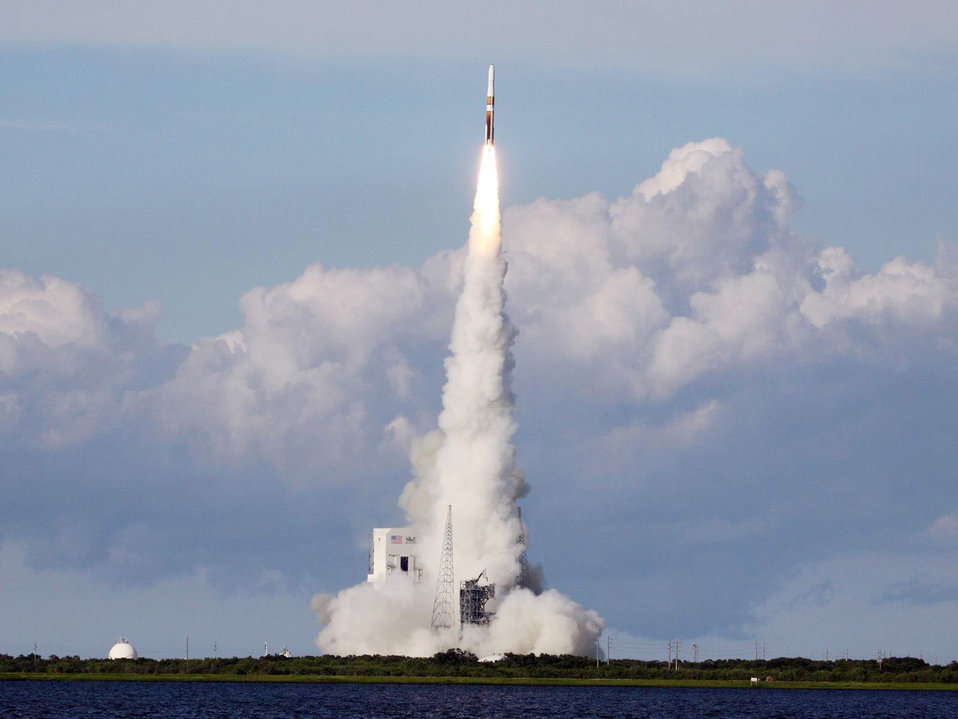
Making a clean liftoff

A Delta IV rocket lifts off from Cape Canaveral Air Station, Fla., June 27 with a Geostationary Operational Environmental Satellite on board that will help predict weather and climate change once it is in orbit.